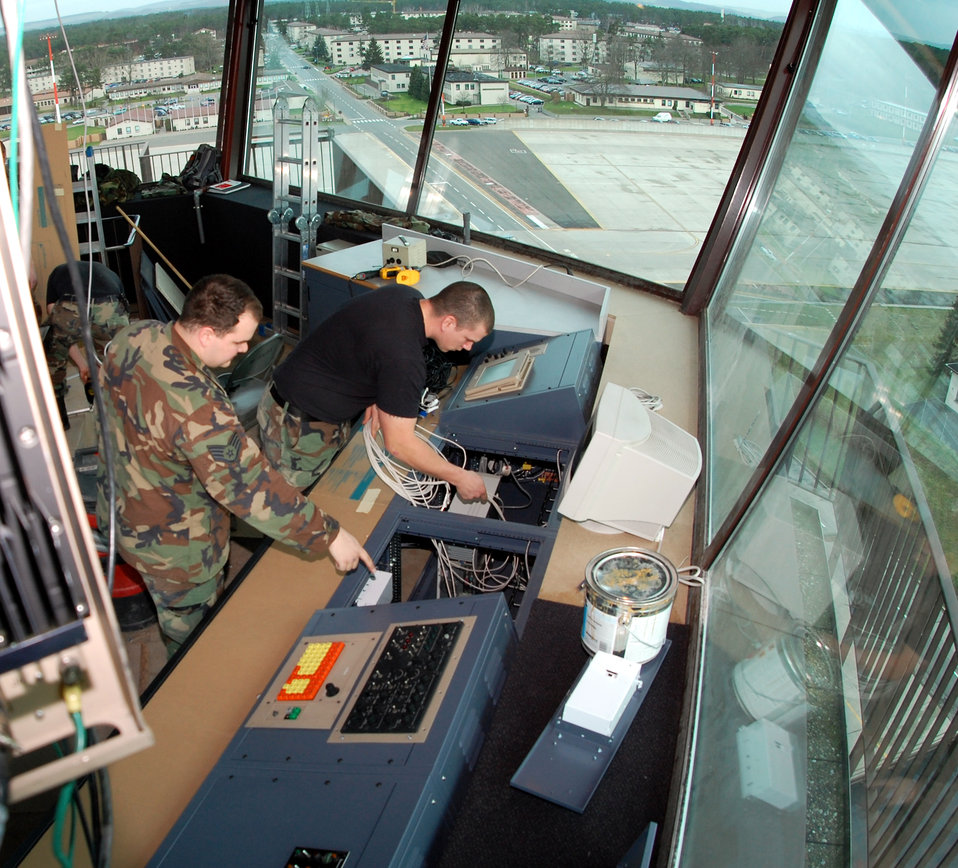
Ramstein tower renovations on schedule

Staff Sgts. David Coleman and Michael Sweet rewire components Feb. 14 during the renovation of the air traffic control tower at Ramstein Air Base, Germany. The tower is undergoing approximately $300,000 worth of upgrades. Work is progressing on time and within budget. The tower staff expects to be fully operational in the